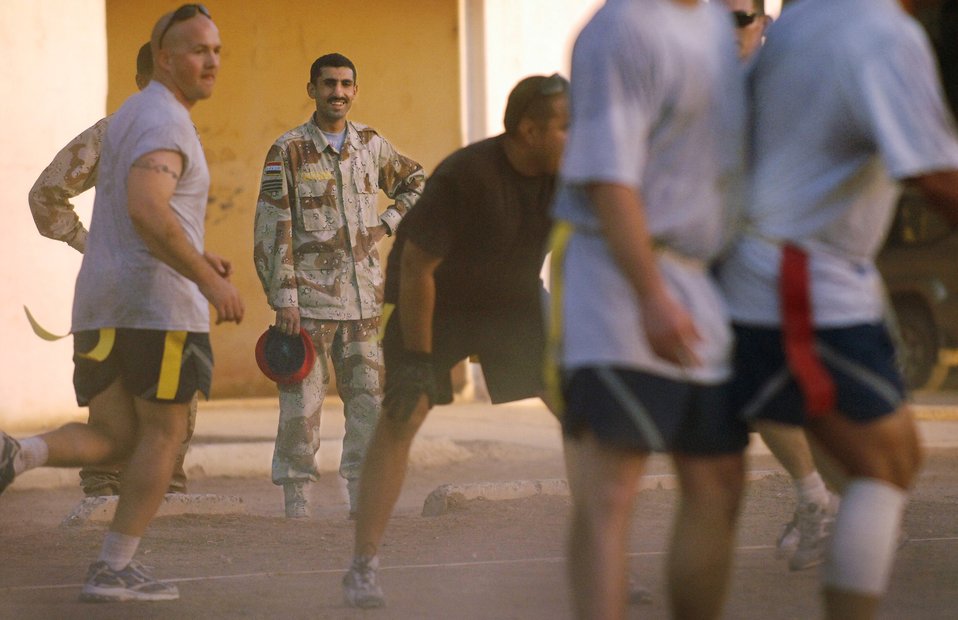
Game day

An Iraqi army